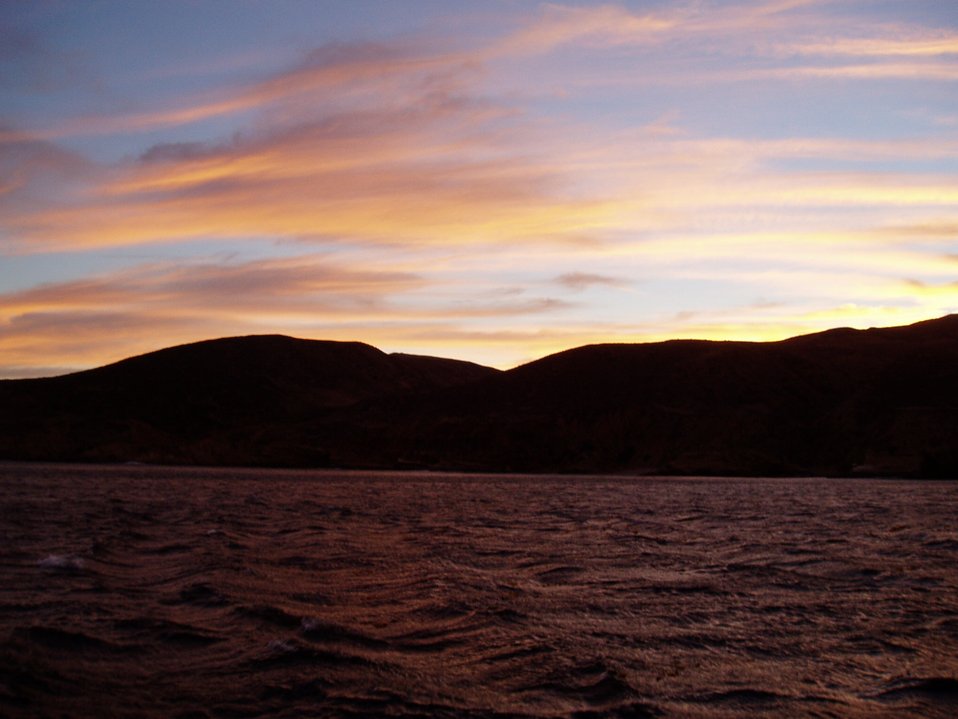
Sunset in the Channel Islands